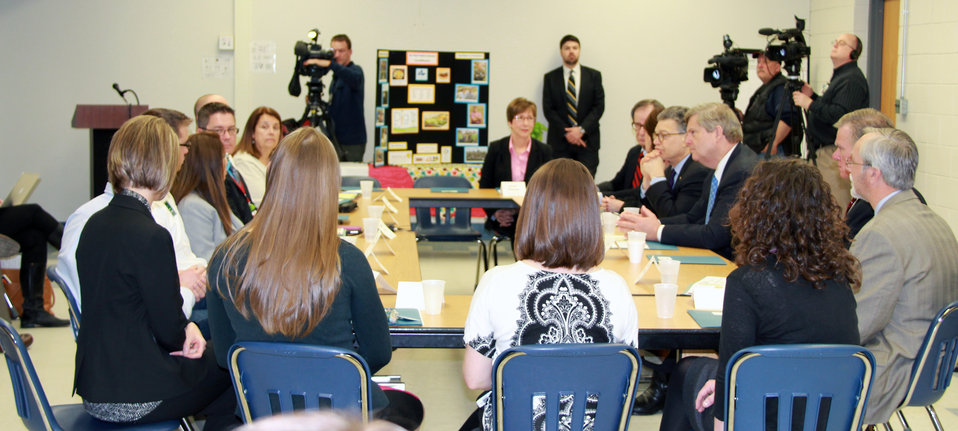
Senator Al Franken (MN) participates in a roundtable discussion on school nutrition with Agriculture Secretary Tom Vilsack in St. Paul, MN, on Apr. 18, 2014.